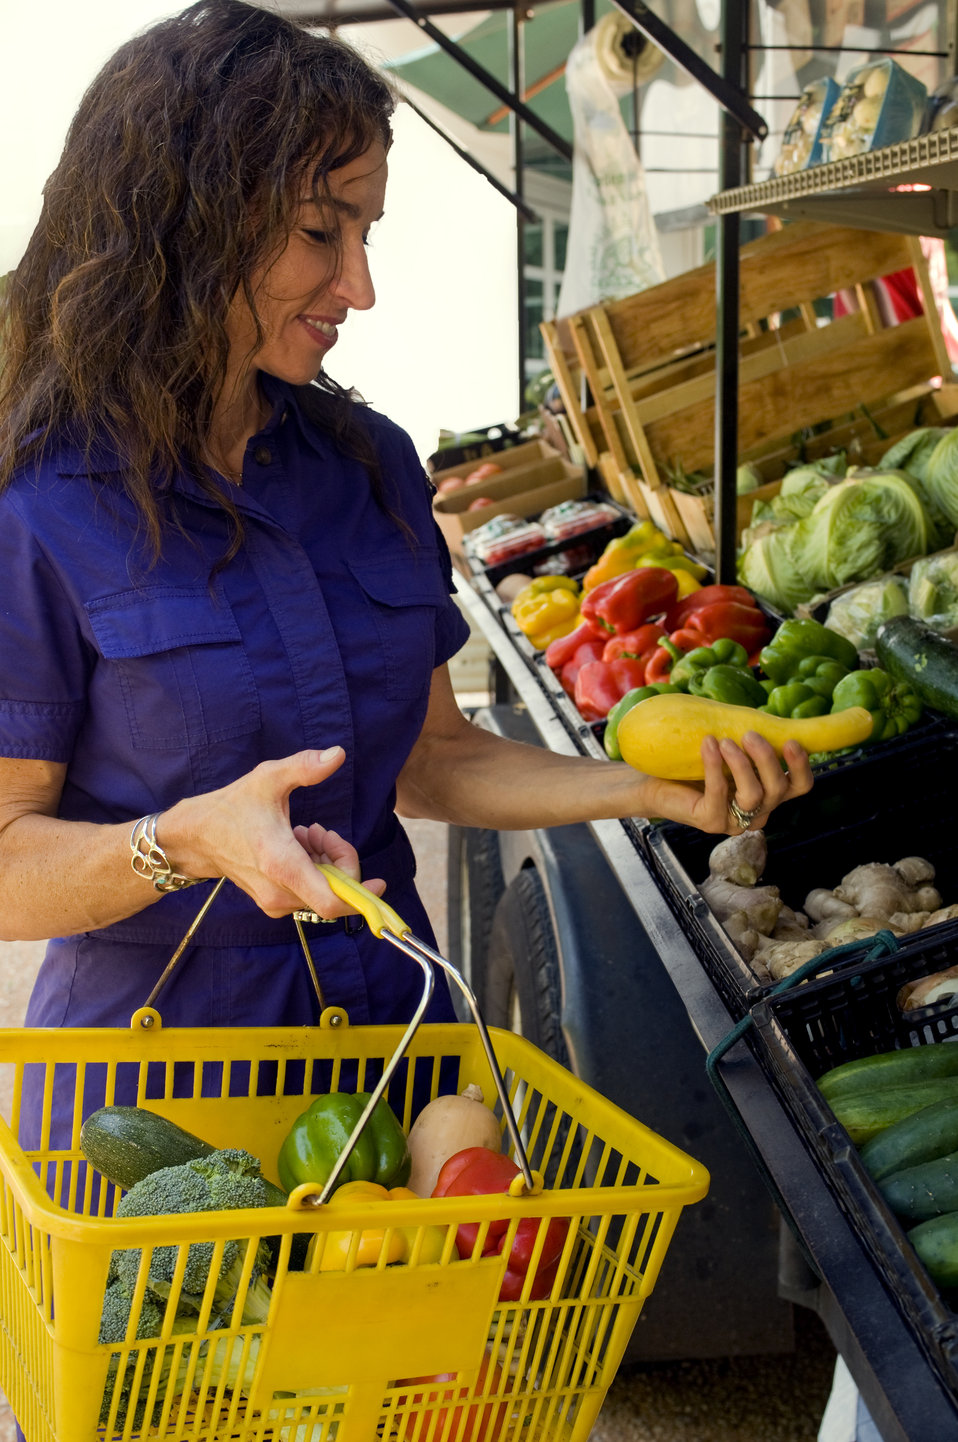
The woman pictured here was choosing an array of healthy fruits and vegetables at a mobile produce market, and placing her choices into a yellow plastic basket she'd held in her right hand. Here she was inspecting a bright yellow squash, for any external abrasions or bruising. Squash has been shown to be high in its dietary fiber and vitamin C content.